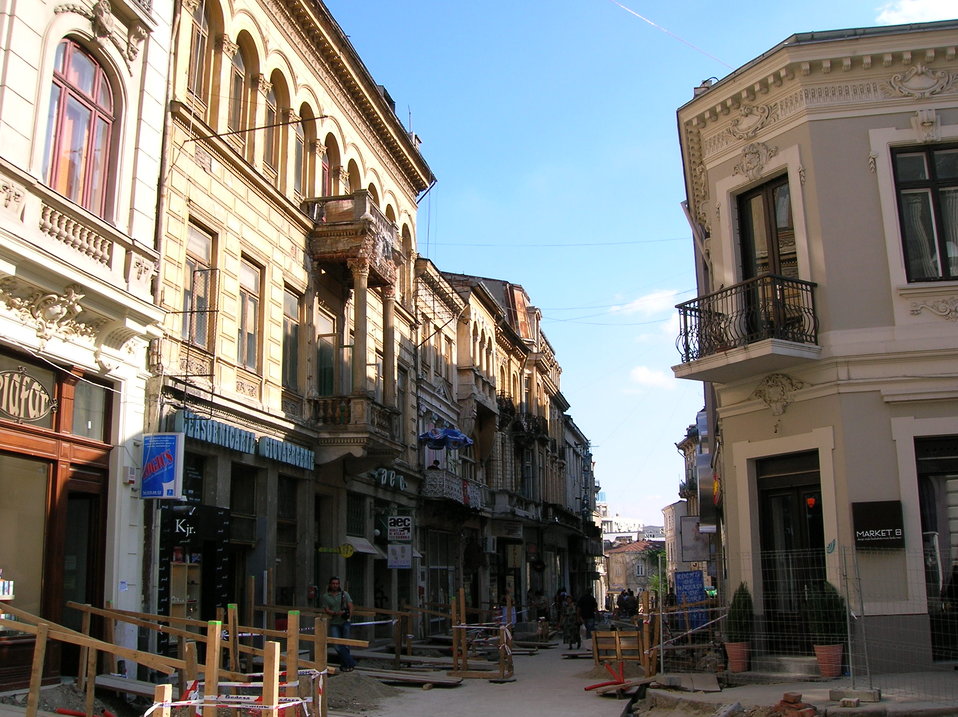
Restoration works in the historic centre of Bucharest in 2007. Fran√ßais†: Chantier de restoration du centre historique de Bucarest en 2007.